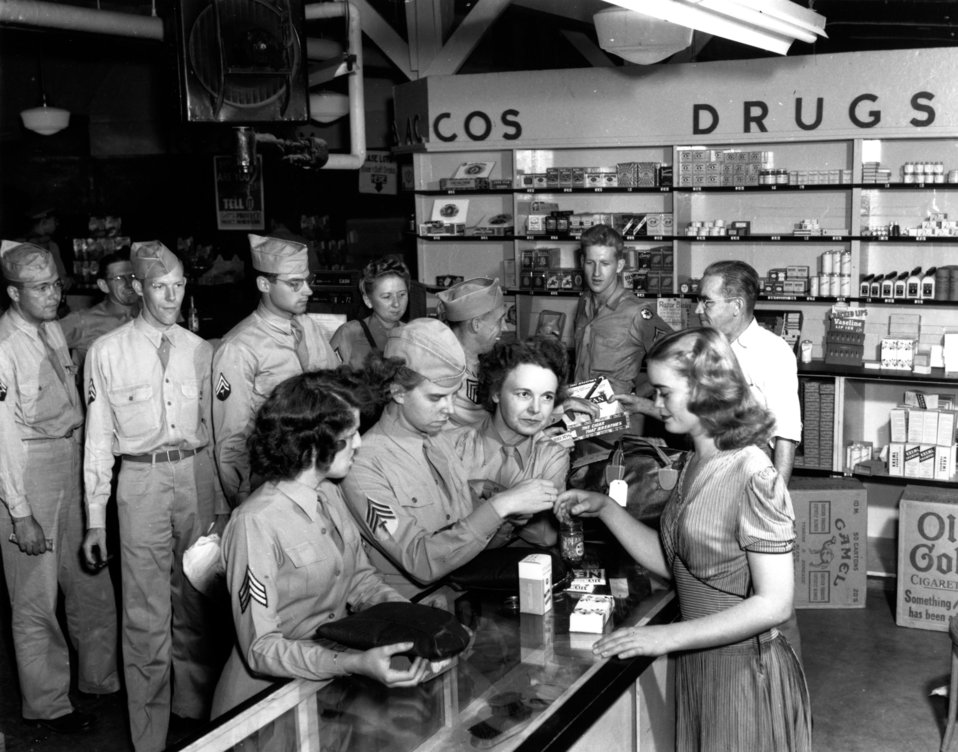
Army Activity at Oak Ridge